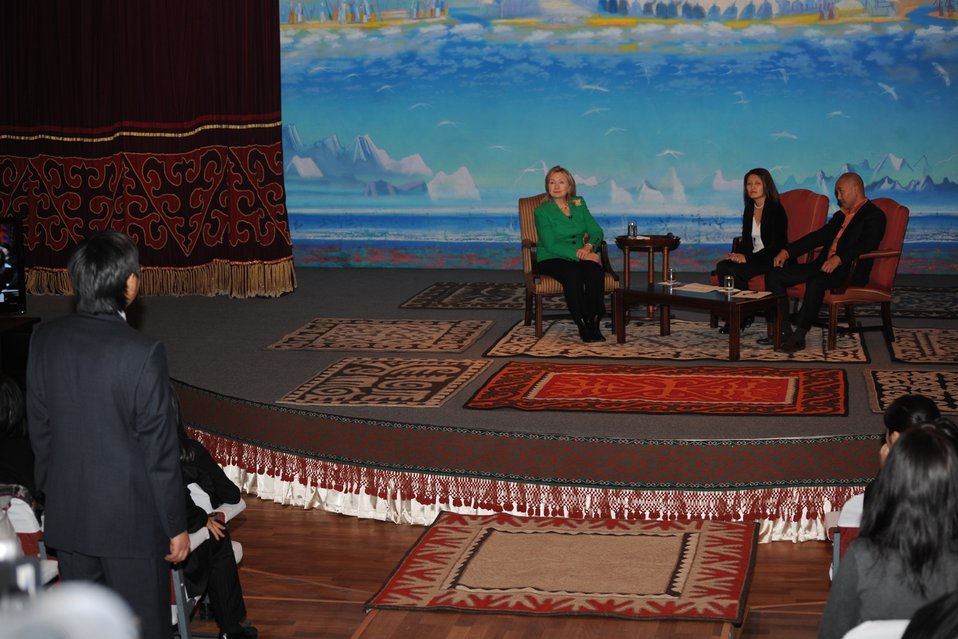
Secretary Clinton Holds a Townterview With Students

U.S. Secretary of State Hillary Rodham Clinton holds a townterview with students in Bishkek, Kyrgyzstan, on December 2, 2010.